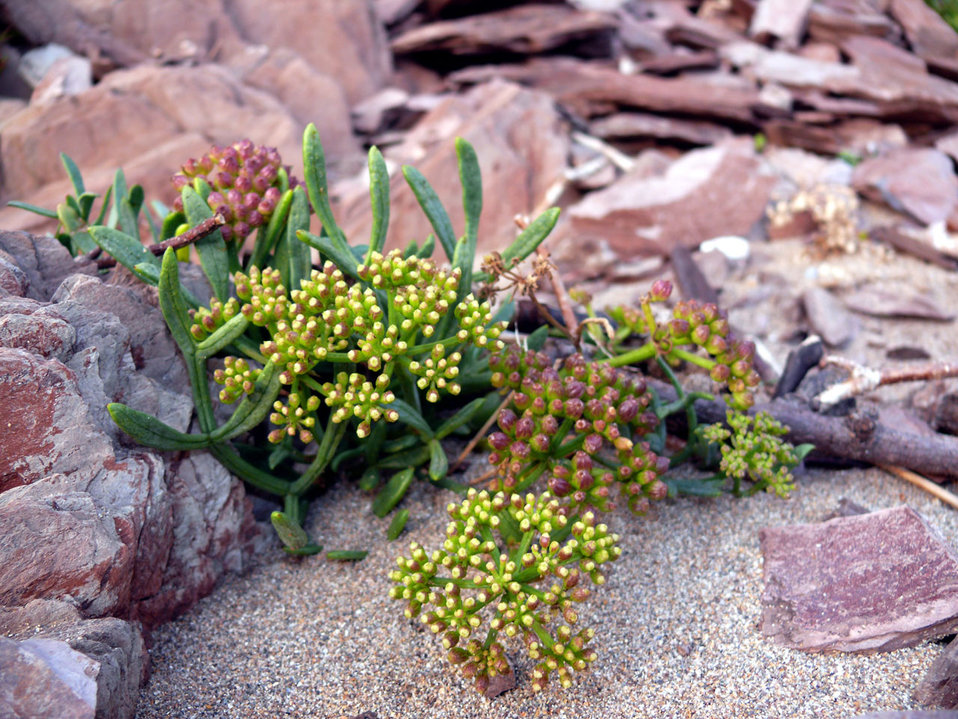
Seaside flower.